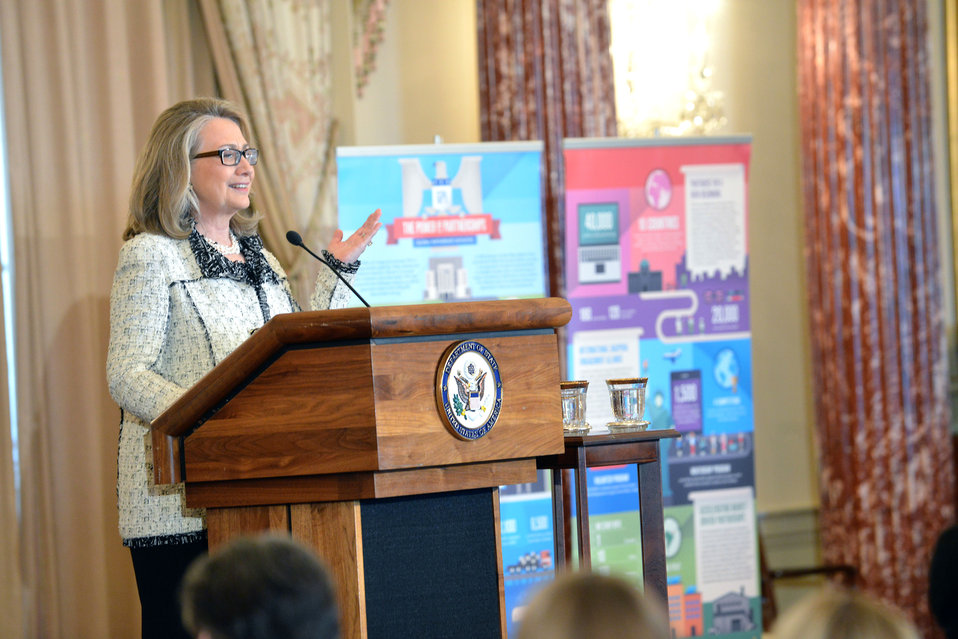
Secretary Clinton Honors the State Department's Public/Private Partnerships

U.S. Secretary of State Hillary Rodham Clinton delivers remarks at a reception honoring the U.S. Department of State's Public/Private Partnerships at the U.S. Department of State in Washington, D.C., on January 31, 2013.